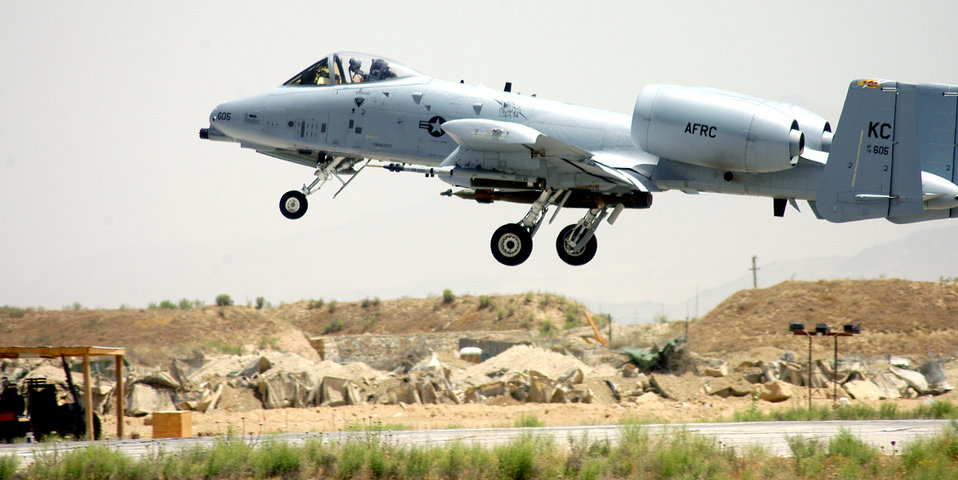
Combat mission

An A-10 Thunderbolt II takes off from Bagram Air Base, Afghanistan, on a combat mission on Tuesday, May 23, 2006. The A-10 is deployed from the Air Force Reserve Command's 442nd Fighter Wing at Whiteman Air Force Base, Mo., in support of Operation Enduring Freedom.